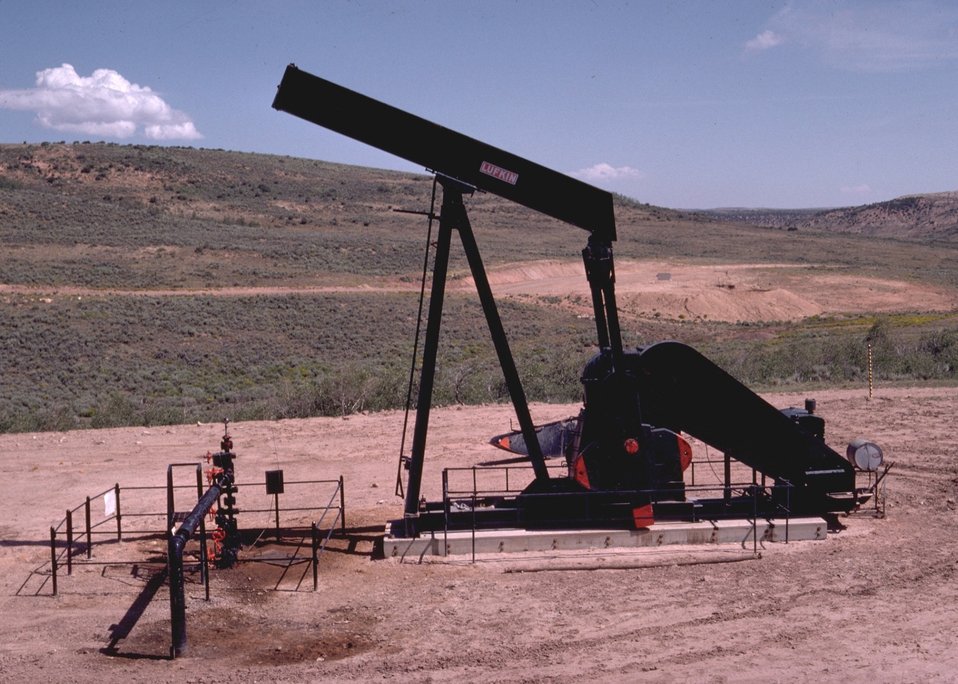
Oil well and associated facilities.